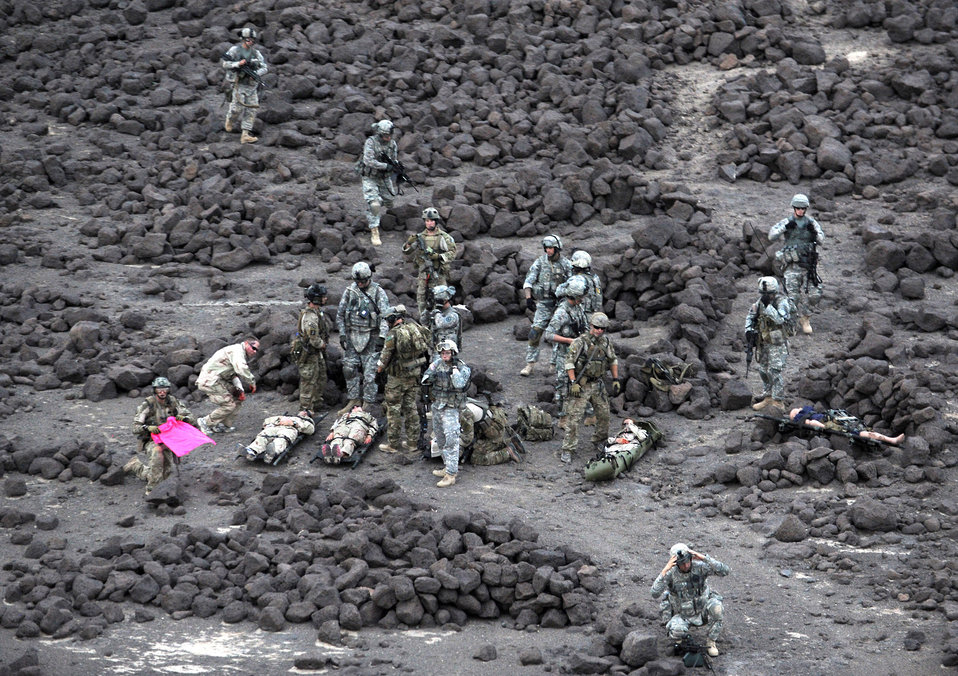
Help is on the way

Air Force pararescuemen, Army site security team members and